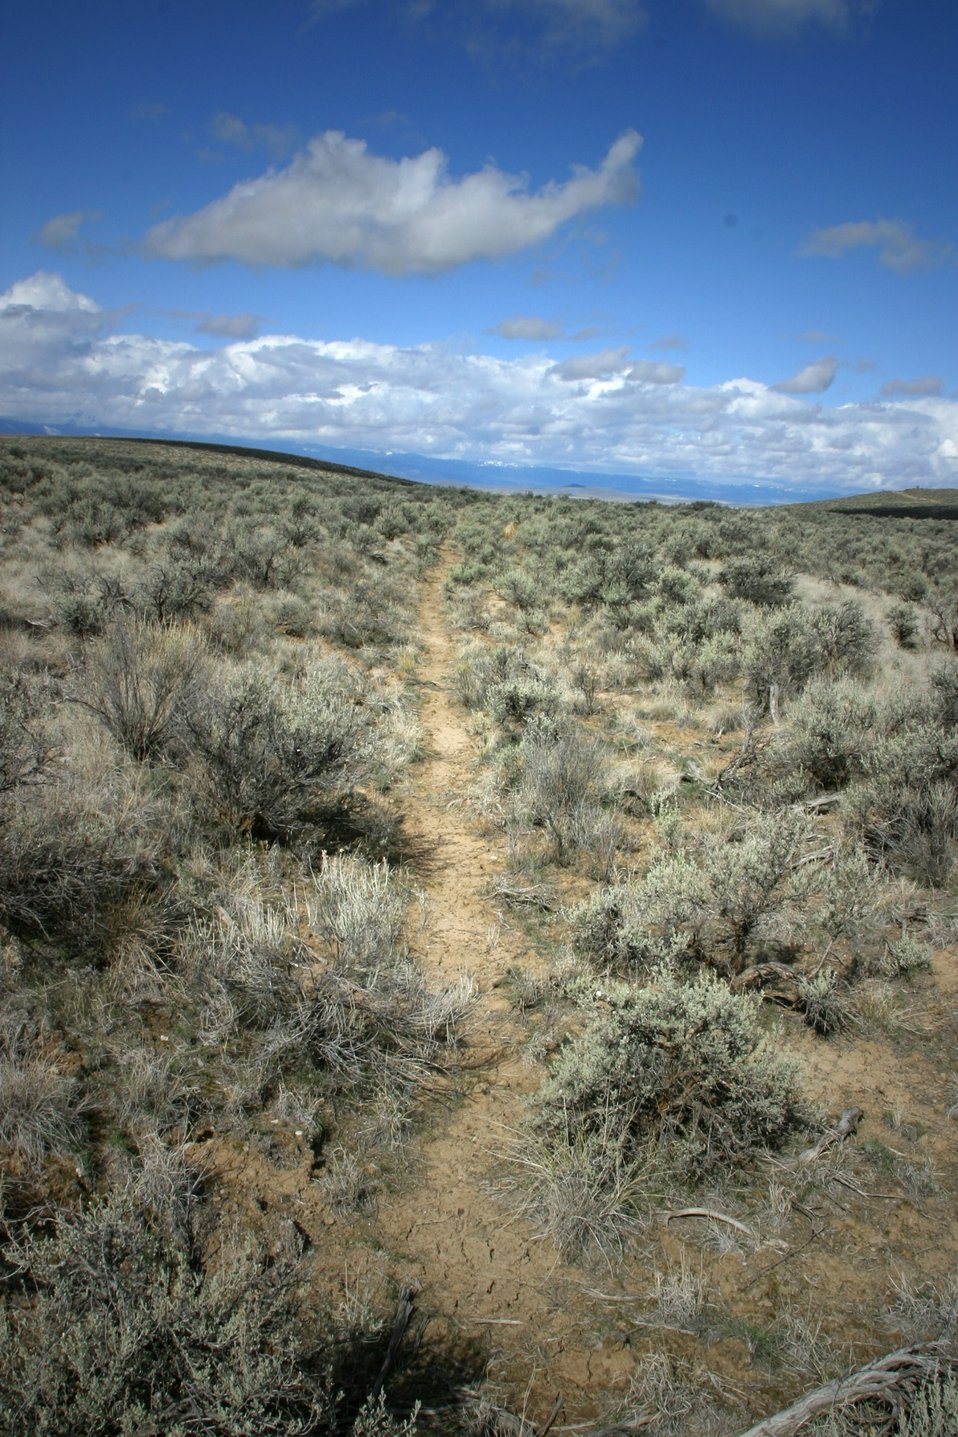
Oregon Trail ruts below the National Historic Oregon Trail Interpretive Center.